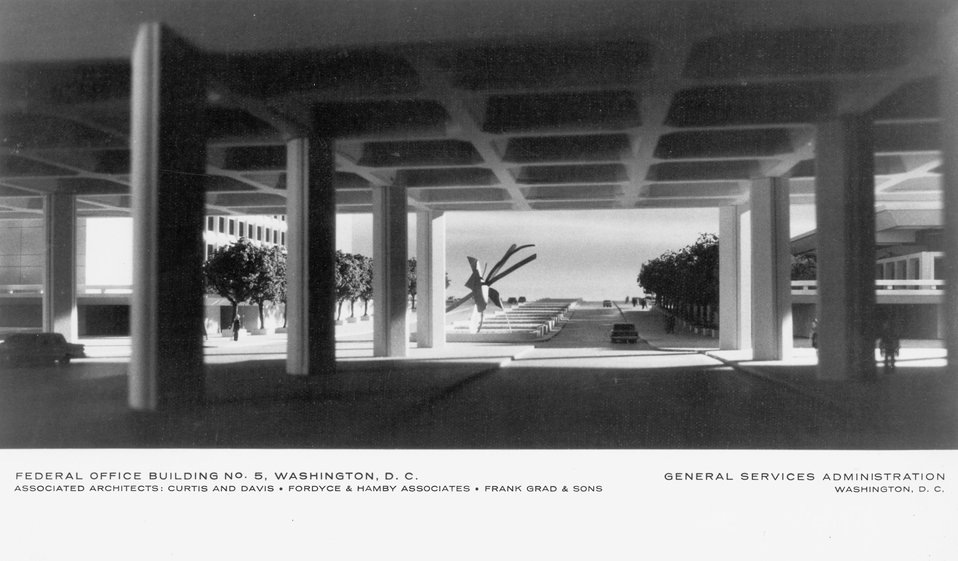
Federal Office building No. 5 Washington DC